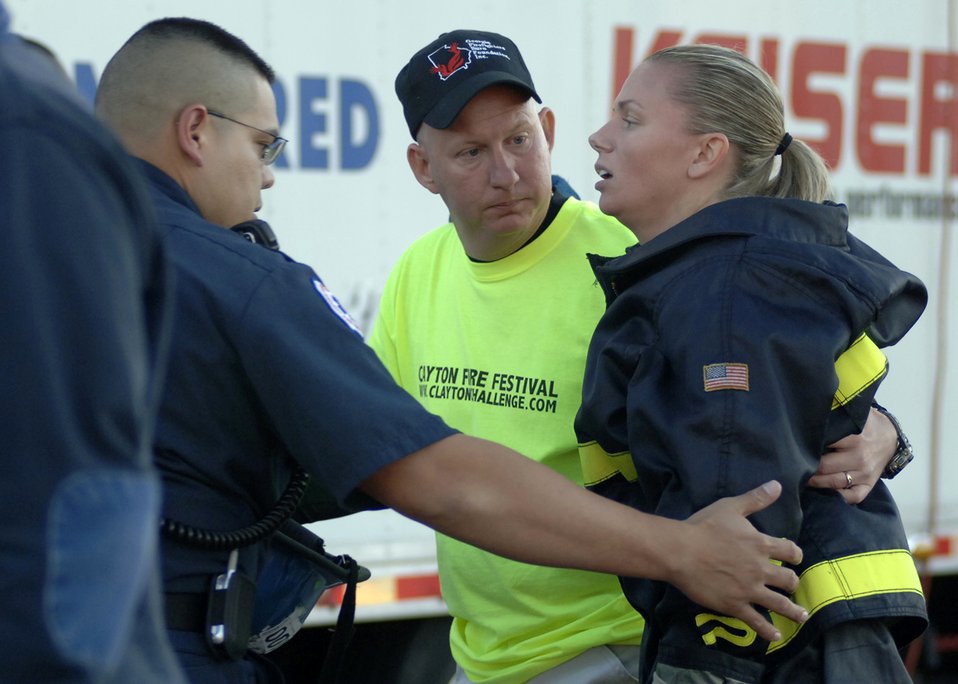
Exhausting

Shenah Groom, Team Travis, walks off in exhaustion after completing the first portion of the Firefighter Combat Competition at Morrow, Ga., Oct. 13, 2006.